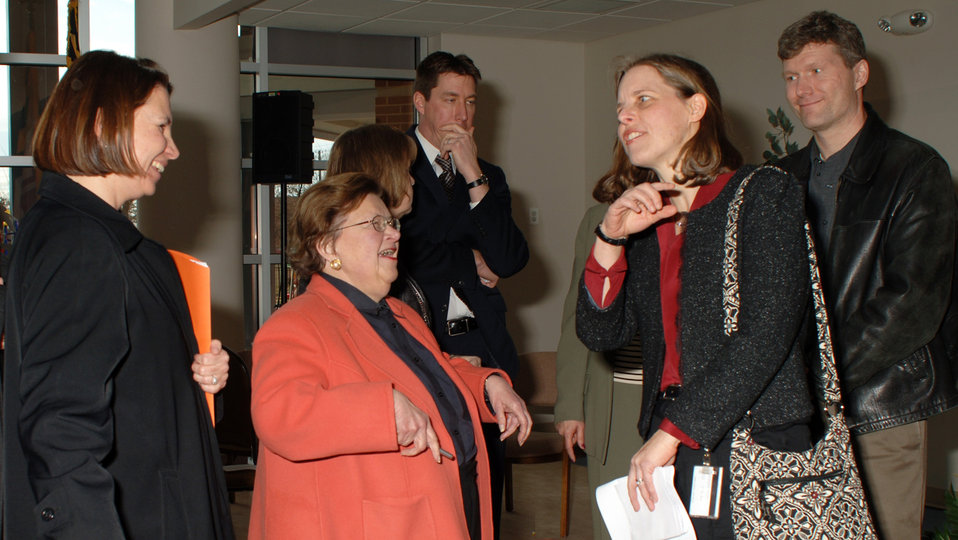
Child Care Center Ribbon Cutting Ceremony

Maryland Senator Barbara Mikulski (center) speaks with NIST staffers and parents at Child Care Center Ribbon Cutting Ceremony.